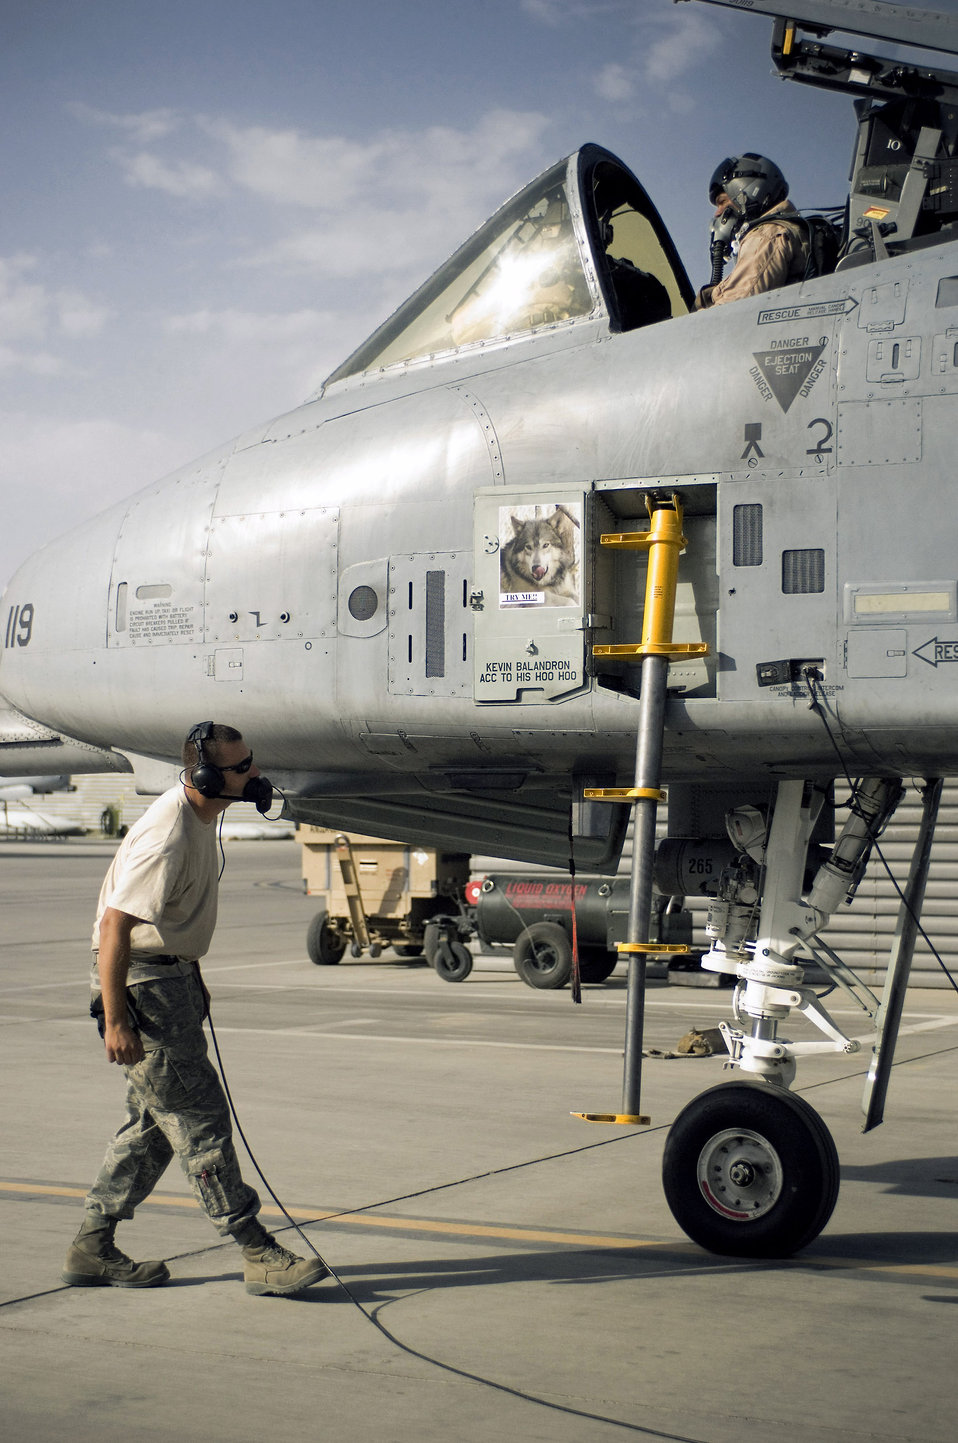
Willow Grove unit completes last A-10 deployment

Staff Sgt. Kevin Bliem and Lt. Col. Thomas Fennell perform final preflight checks prior to a close-air-support mission at Bagram Air Field, Afghanistan, Sept. 12. Sergeant Bliem and Colonel Fennell are both Pennsylvania Air National Guardsmen deployed from the 111th Fighter Wing. Colonel Fennell is a pilot with the 103rd Expeditionary Fighter Squadron. Sergeant Bliem is a crew chief with the 455th Expeditionary Aircraft Maintenance Squadron.